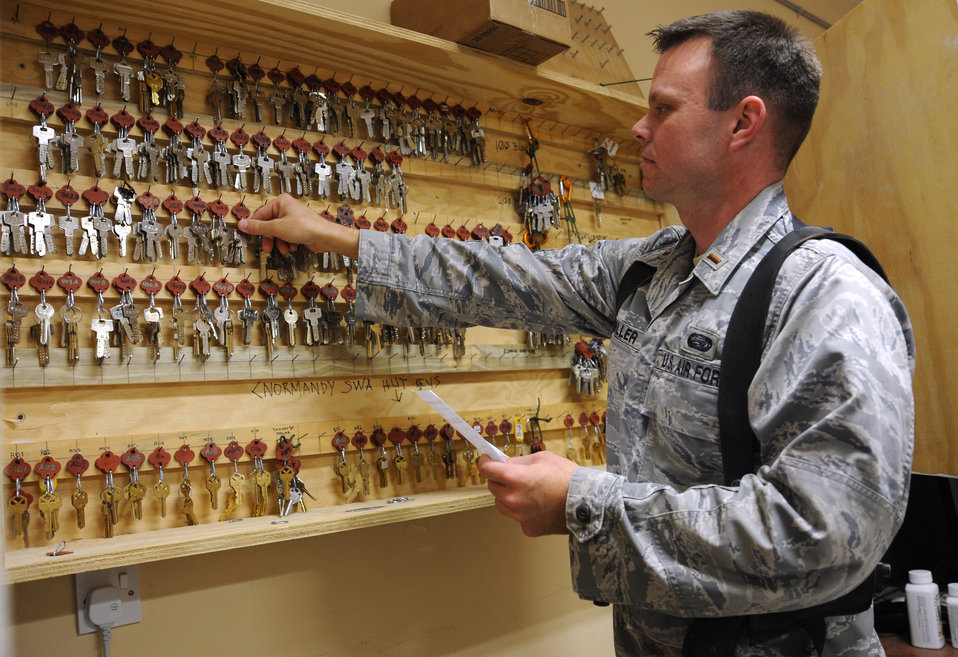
Airmen help Sailors take care of Marines

2nd Lt. Jeremy Miller, the base command group billeting officer at Al Asad Air Base, Iraq, checks the keys for two of the camp living areas Dec. 16, 2009. A handful of Airmen attached to the BCG work with Navy personnel to maintain the infrastructure of buildings, feed troops, provide shelter and ensure their basic needs are met at this Marine base. Lieutenant Miller is deployed from Robins Air Force Base, Ga., and hails from Billings, Mont.